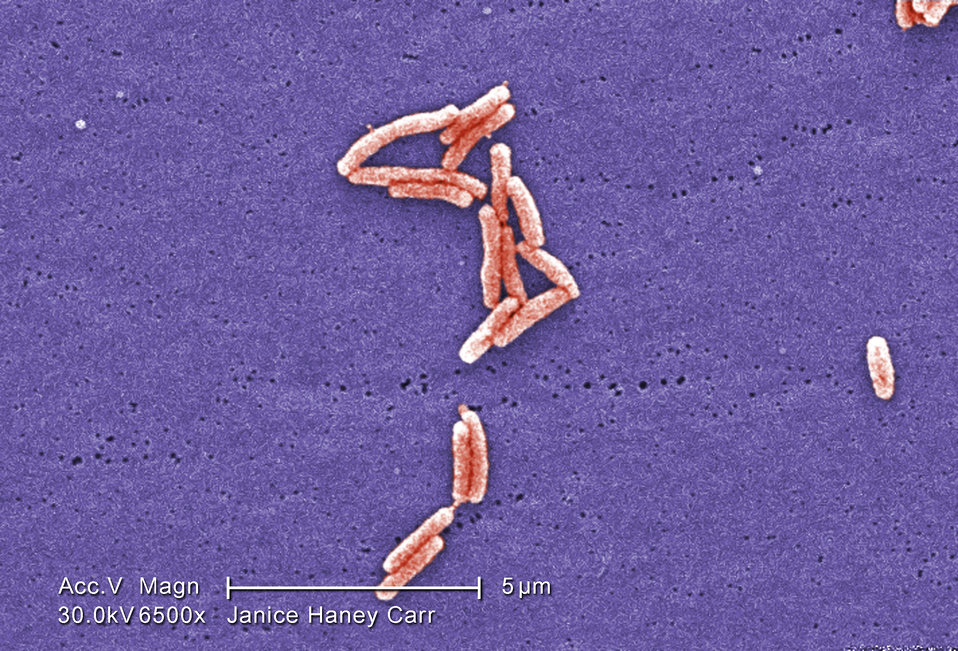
Magnified 6500X, this colorized scanning electron micrograph (SEM) depicted a small grouping of Gram-negative Legionella pneumophila bacteria. Please see PHIL 11092 through 11152 for additional SEMs of these organisms, specifically PHIL 11125 for a black and white version of this image. It appears that a few are still joined to one another just prior to the completion of their reproductive process known as cell division. In some of these views you'll note the presence of flagellar appendages.